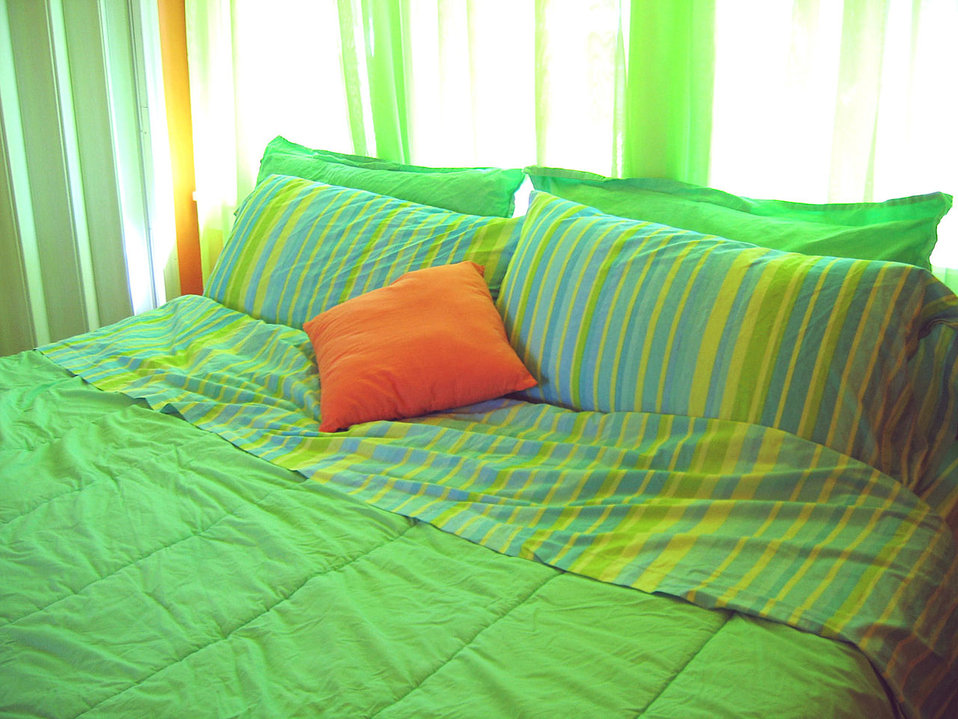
Green room

Bedroom decor.